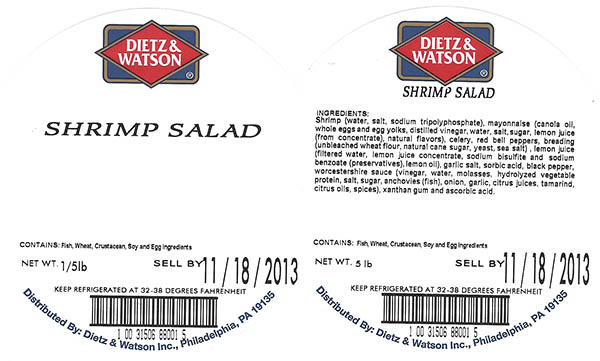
RECALLED – Prepared salads

October 24, 2013 – Product Recall – Boston Salads and Prepared Foods Recalling Ready-To-Eat Products Because of Possible Health Risk.